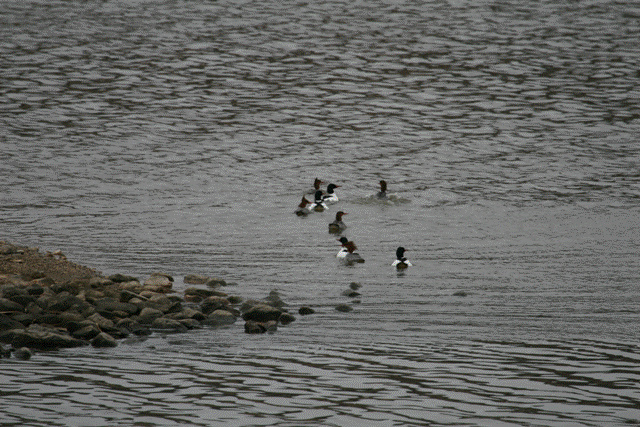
Common Mergansers Swimming

Like other merganser species, these fish-feeding ducks have serrated edges to their bills to help them grip their prey; for this reason they are somtimes referred to as 'sawbills'.